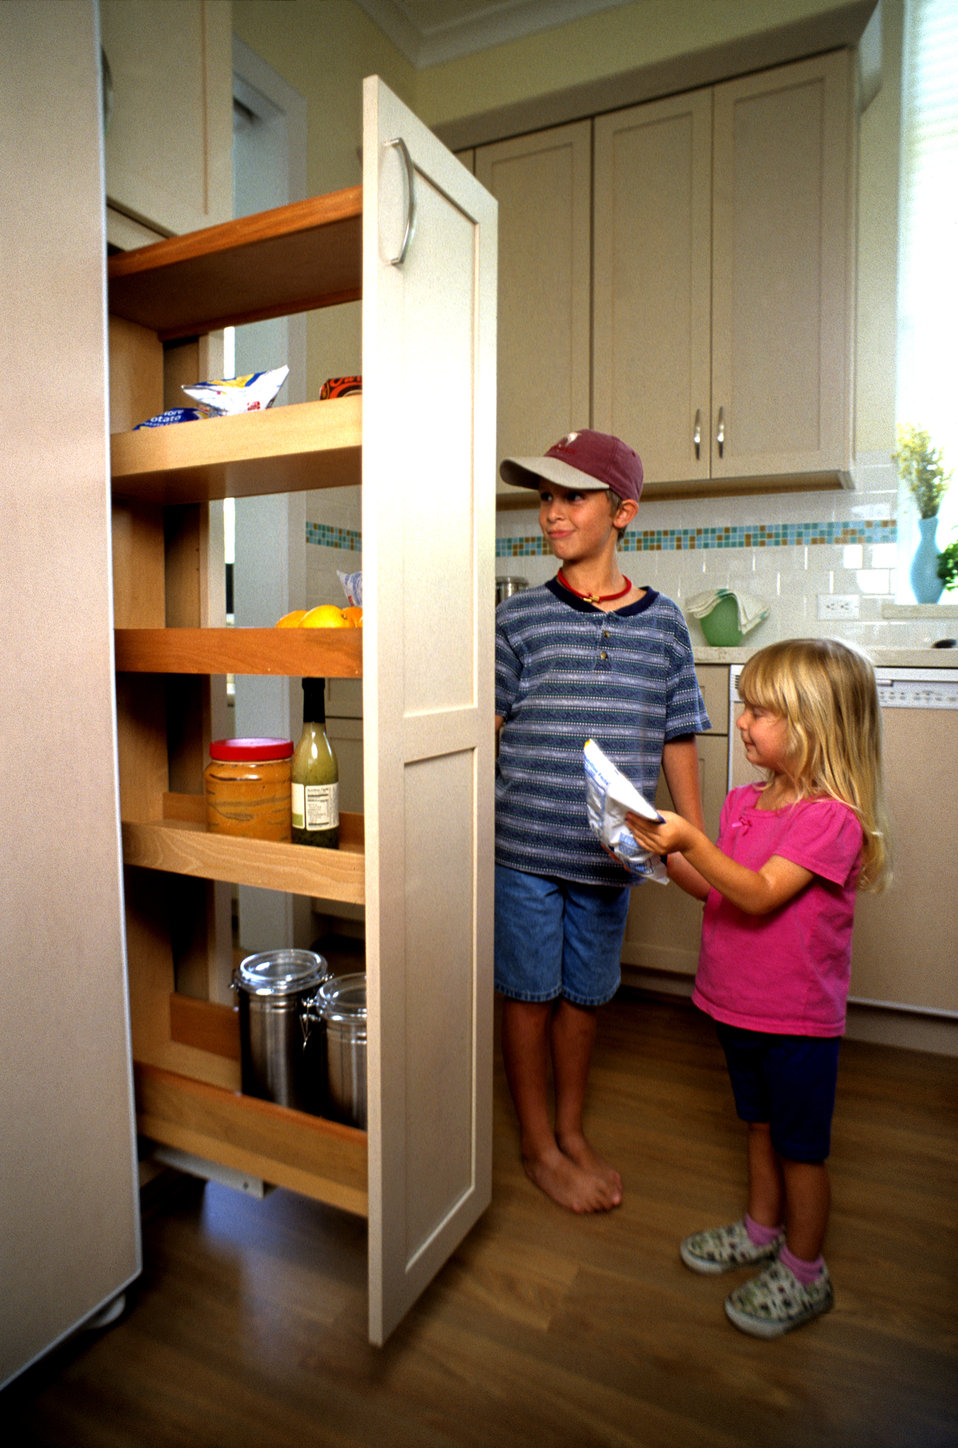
This sister and brother, were photographed in this 2000 image in order to illustrate how the installation of a 'pull-out' pantry inside this kitchen, made kitchen tasks much easier for a wider range of users, whether they were handicapped, or unimpaired. Using pantry shelving, which could be pulled out toward the user, was easier for many, for it did not require awkward bending and reaching back into deep spaces, as is the case with many fixed-shelf closet pantries. In this three-image example (See PHIL 9310, and 9311), the entire cabinet rolled out to accommodate different reach-ranges, including a standing adult man, an adult woman using a wheelchair, and these child siblings.'Part of the College of Design at North Carolina State University (NCSU), Raleigh, NC, the Center promotes the concept of universal design in all design, construction, and manufacturing disciplines through research, design assistance, and training.